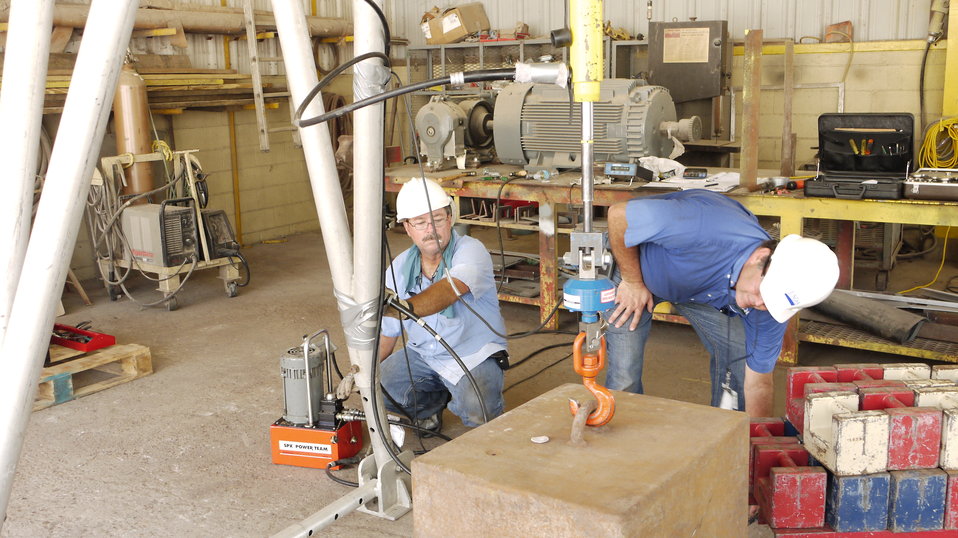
U.S. Department of Agriculture’s (USDA) Grain Inspection, Packers, and Stockyard Administration (GIPSA) industrial specialists Gerald Raymond and Troy Kramer calibrate the elevator owned test weight standards on site. These standards are used to test the accuracy of the elevator hopper scales. USDA GIPSA provides official testing of Automatic Bulk Weighing (Hopper) scales used in official certification of grain weight.